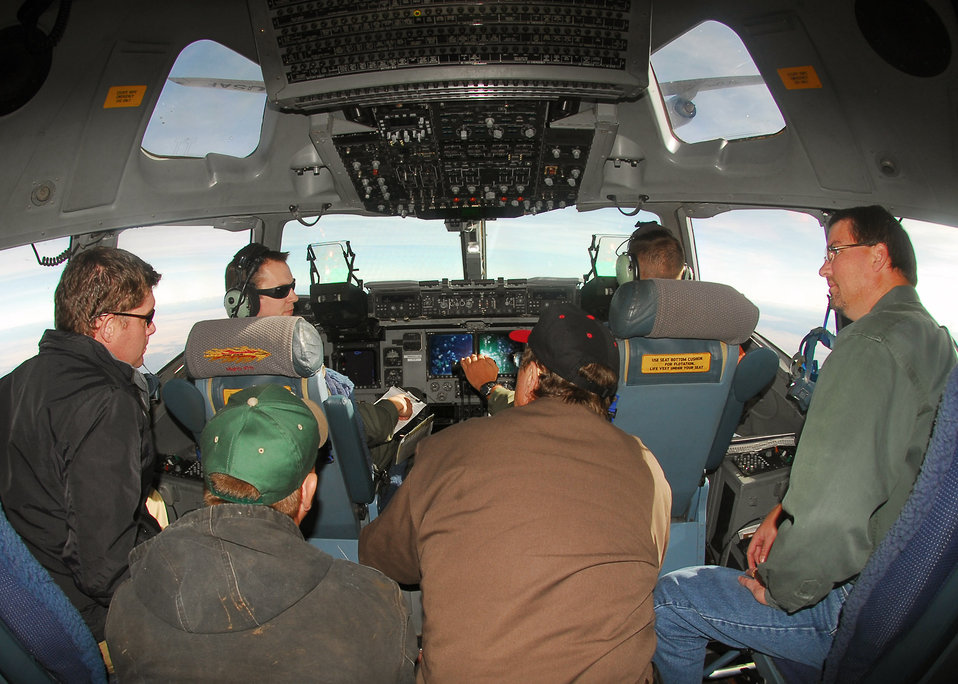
Altus community members spend time in sky

Capt. Wesley Skenfield answers questions as Capt. Aaron Gibbs lines up their C-17 Globemaster III for refueling by the KC-135 Stratotanker visible in the upper windows. The passengers are neighbors of Altus Air Force Base, Okla., and were part of a Farm-City community outreach program orientation flight Nov. 14.